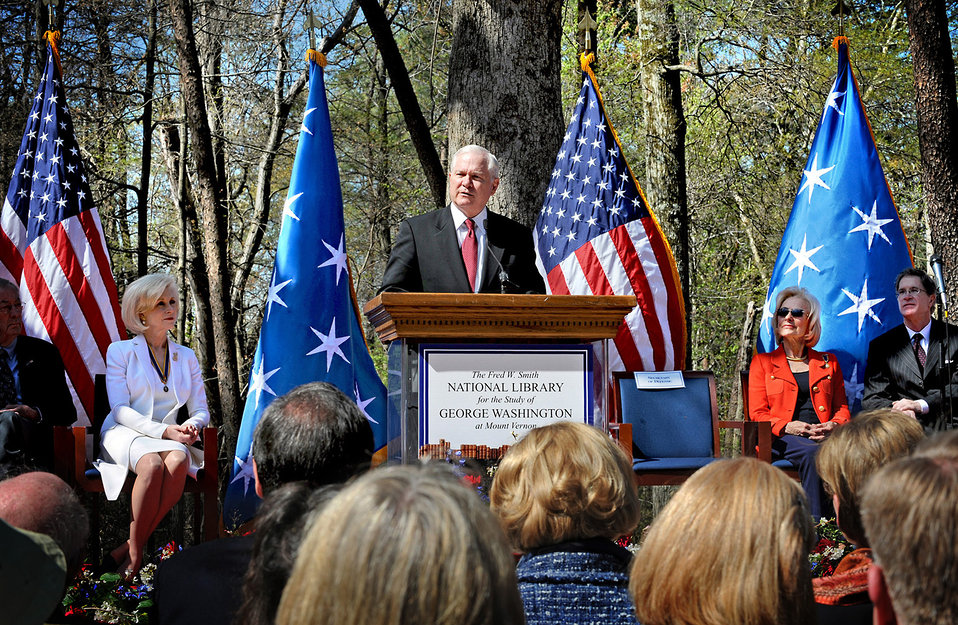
Gates: America must balance idealism, realism

Defense Secretary Robert M. Gates speaks at the groundbreaking for the National Library for the Study of George Washington April 14, 2011, on the grounds of the Mount Vernon Estate, Va.